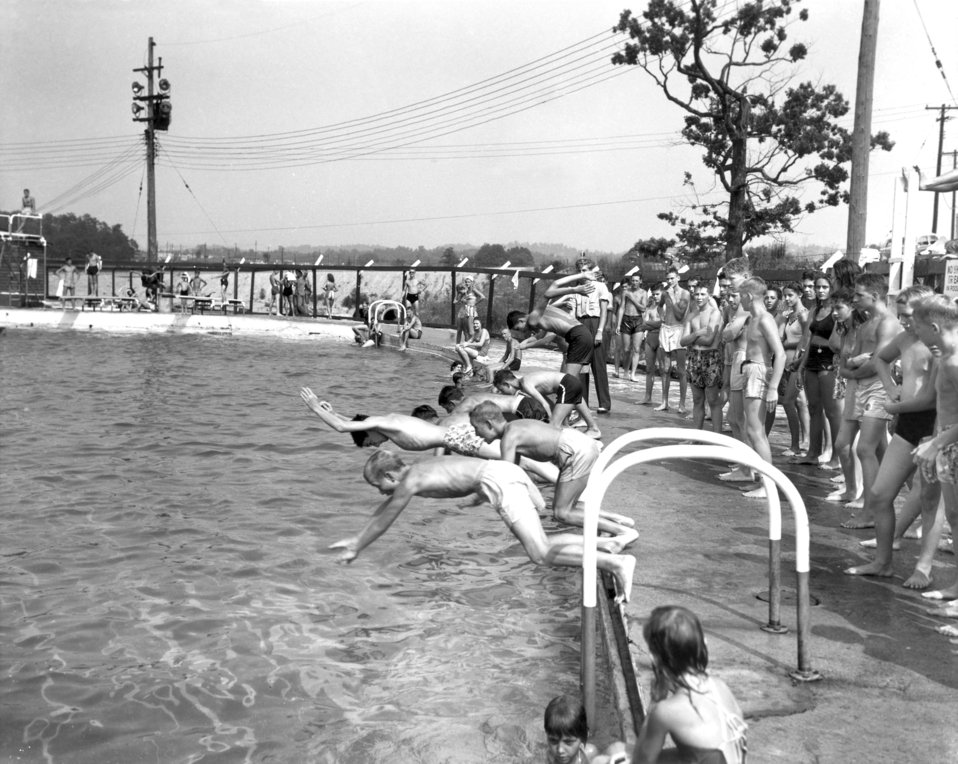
Swimming meet Oak Ridge

1818-4 DOE photo by Ed Westcott

Swimming meet Oak Ridge Tennessee 7/12/46